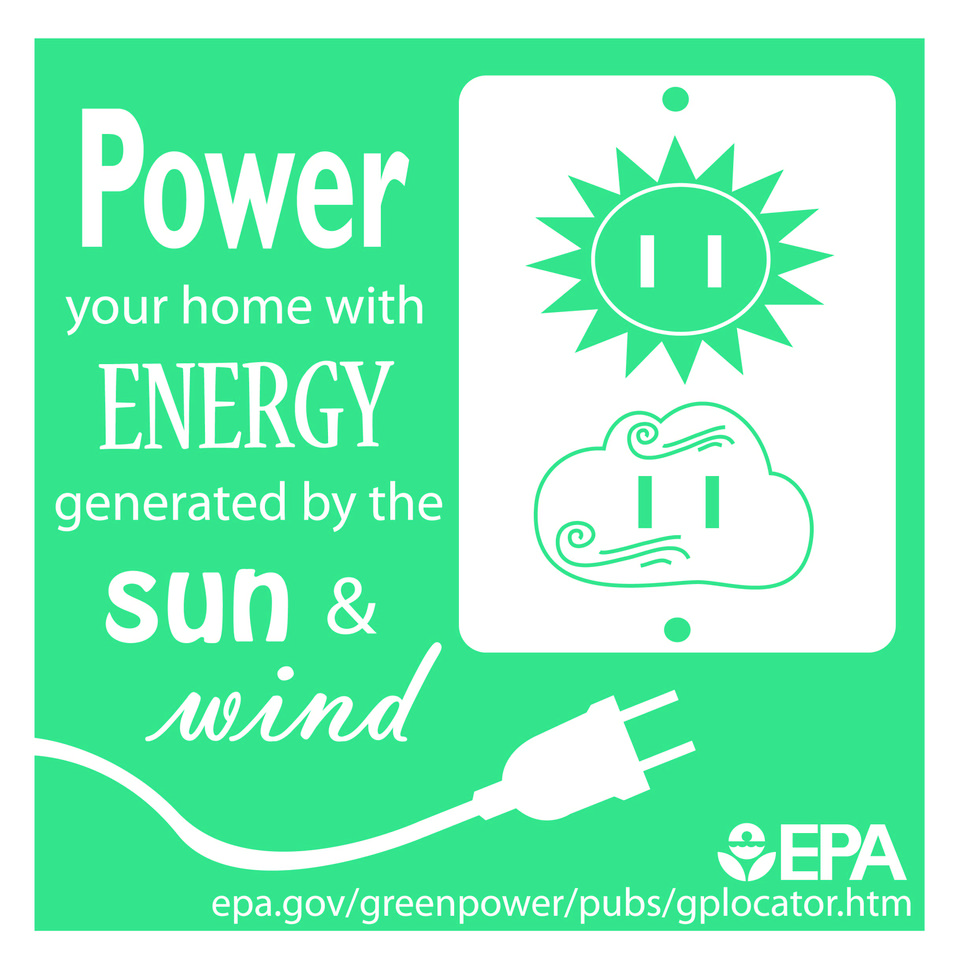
Using green power is a great way to reduce the environmental impacts associated with conventional electricity use. Check our Green Power Locator to find information about green power options available in your state: www.epa.gov/greenpower/pubs/gplocator.htm